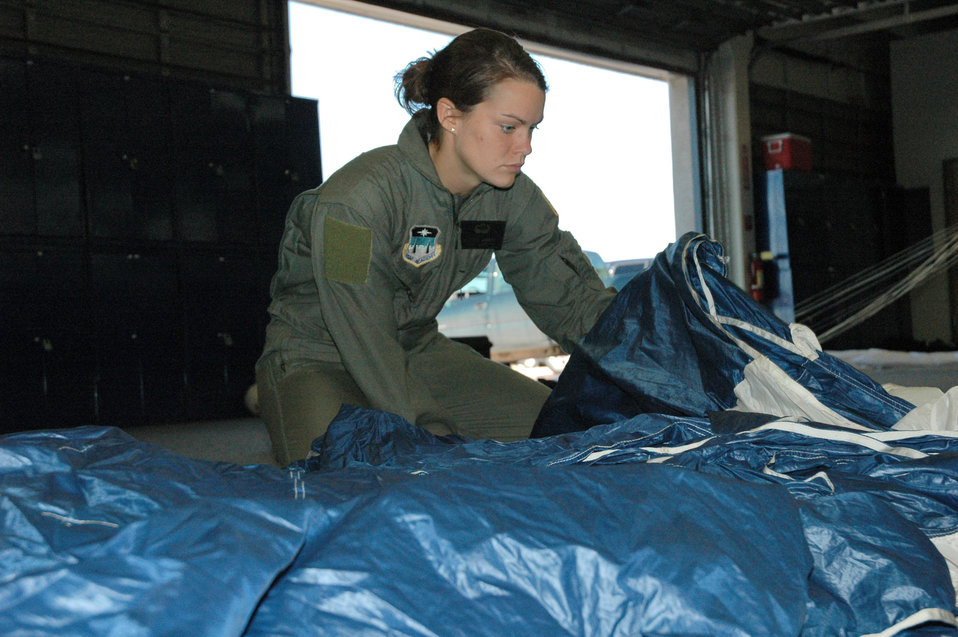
Wings of Blue

U.S. AIR FORCE ACADEMY, Colo. -- Cadet 3rd Class Kaitlin Tar Dieu flanks the nose of her parachute and checks for control capability. She is with the